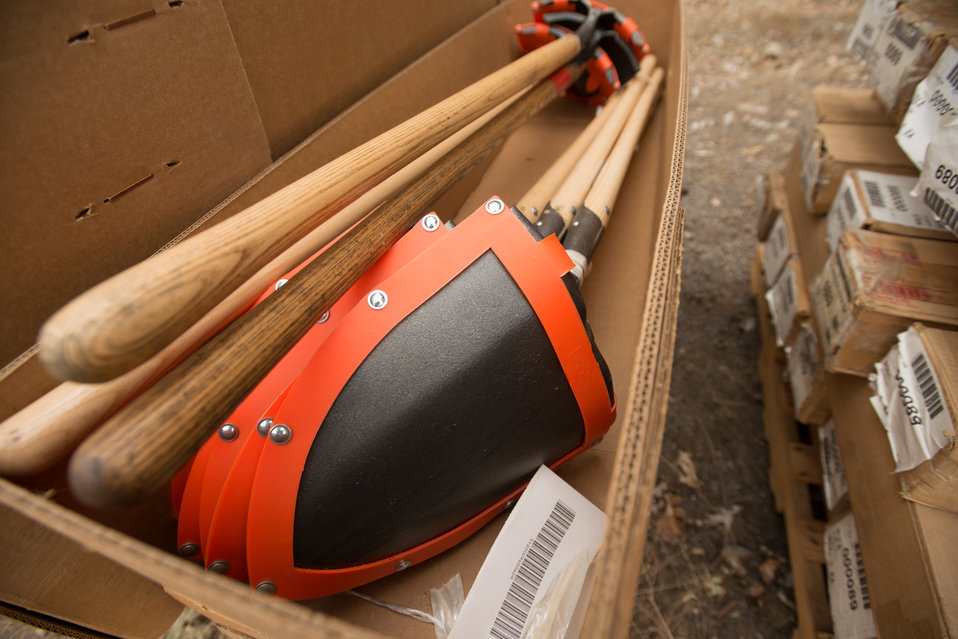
New shovels available for firefighters at the Salmon River Complex Fire burning northwest of Sawyers Bar and west of Etna and Yreka, CA in the Klamath National Forest, on Tuesday, Aug. 6, 2013.It is vital that when a firefighter needs fire resistant clothing, a Mccloud Tool, Pulaski Axe, Combi Tool, pumps, connectors and hoses to draw water from a portable reservoirs to pressurize hand line (fire hoses), they go to this centralized point to get readily available item for issue or replacement as needed. These supplies have been shipped from the National Interagency Supply Cache System depots and/or other caches to this and other fires across the nation.